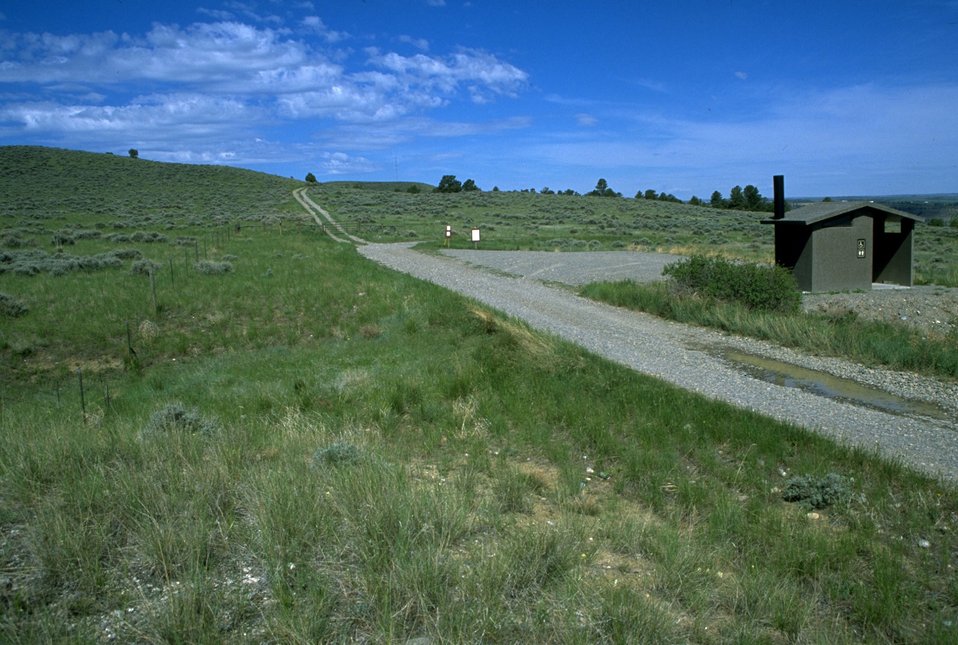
Restroom and parking area in the Four Dances Natural Area